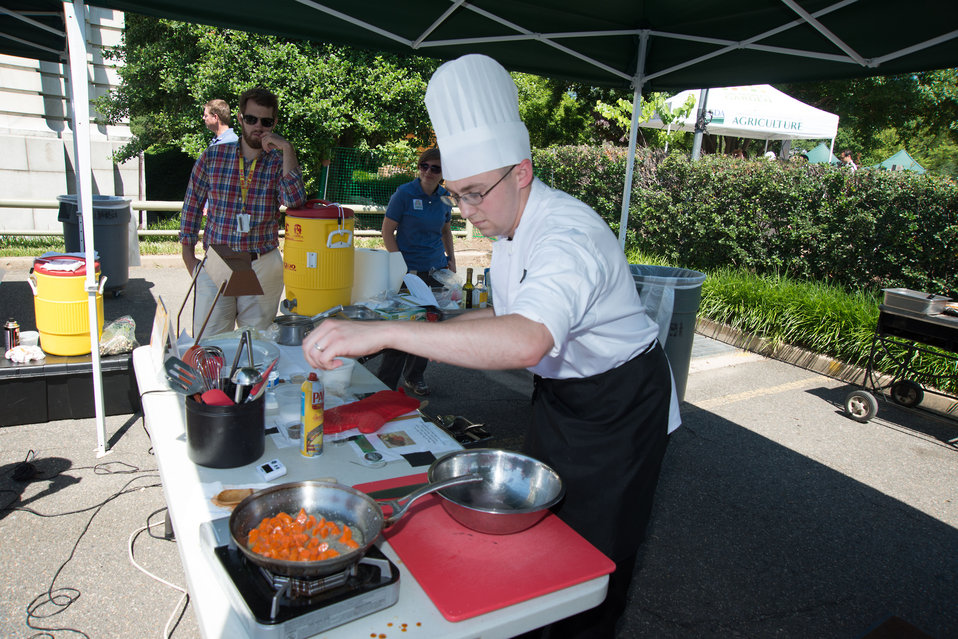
U.S. Marine Corps Sergeant (SGT) Joseph Hale prepares a meal at the Military Chefs barbeque battle held at the opening of the U.S. Department of Agriculture’s (USDA) Famers Market in the east parking lot at USDA on Friday, Jun. 6, 2014.